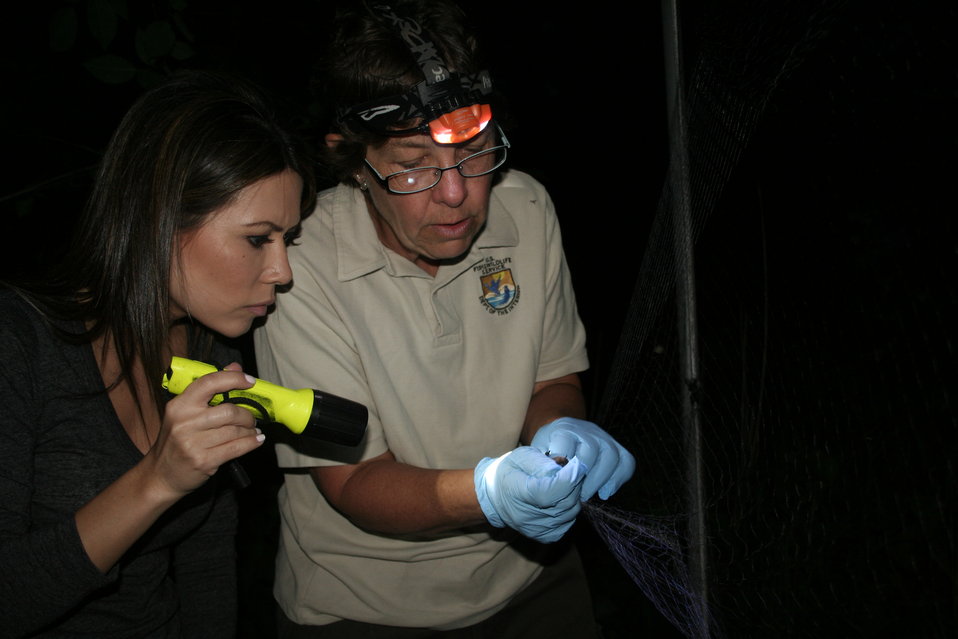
Biologist Examining Bat